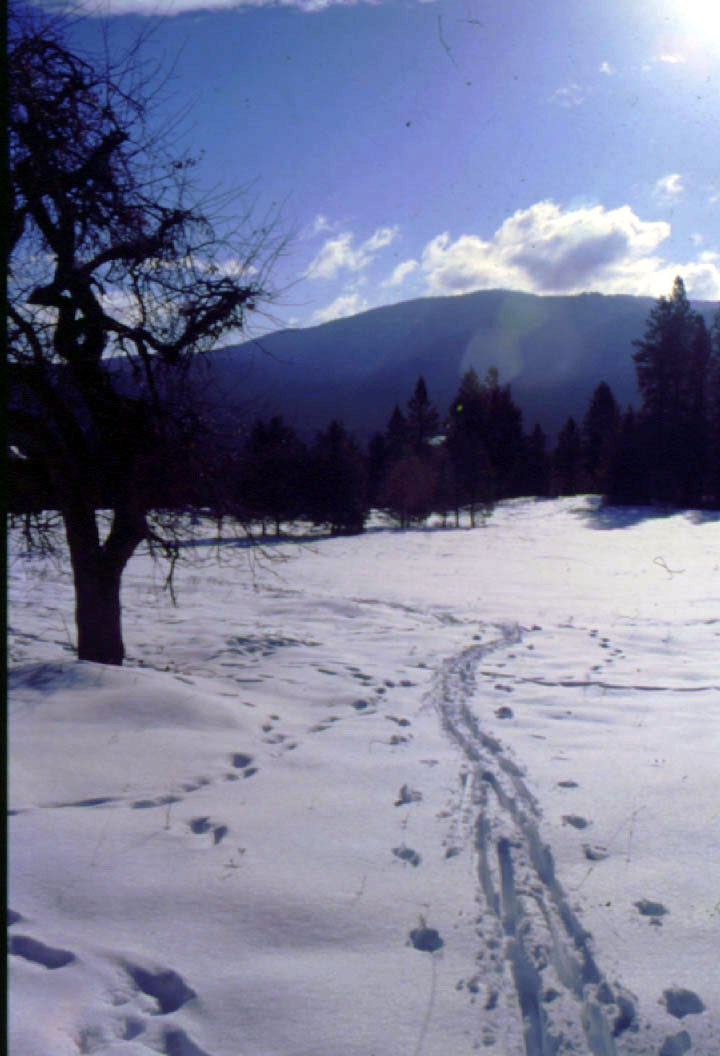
Ski tracks

Little Pend Oreille Refuge, WA.